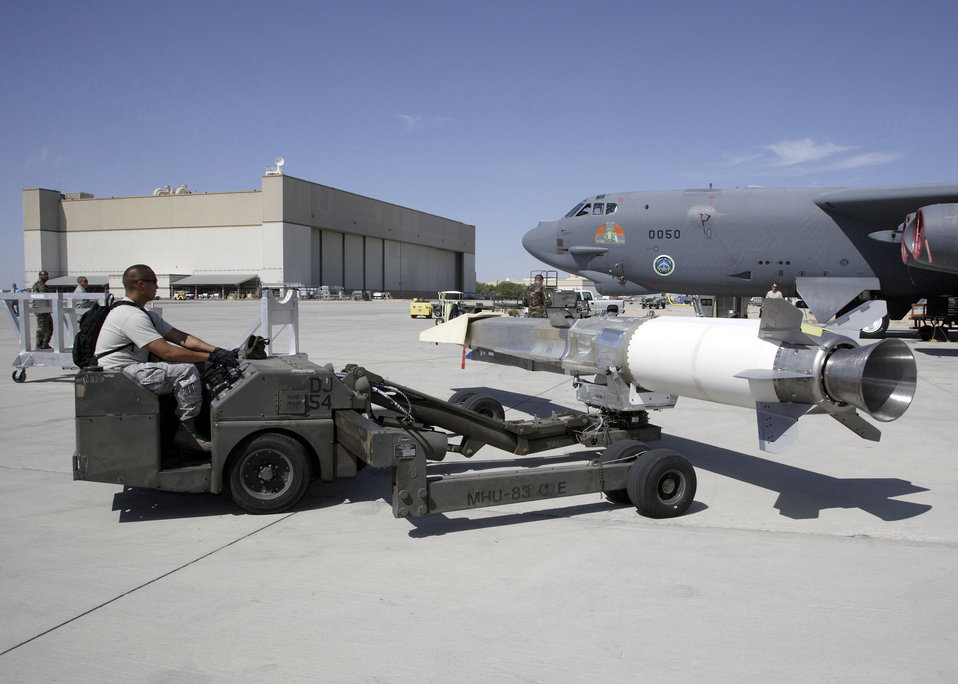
Waverider meets Stratofortress

On the flightline of Edwards Air Force Base, Calif., Staff Sgt. Jonathan Young prepares to upload the X-51A WaveRider hypersonic flight test vehicle to a B-52 Stratofortress July 17 for fit testing. Two B-52 test flights are planned this fall prior to the X-51's first hypersonic scramjet flight over the Pacific Ocean scheduled in December. Representatives from the Air Force Research Laboratory, DARPA, Pratt & Whitney Rocketdyne and Boeing are partnering on the X-51A technology demonstrator program. Sergeant Young is with the 412th Maintenance Group.